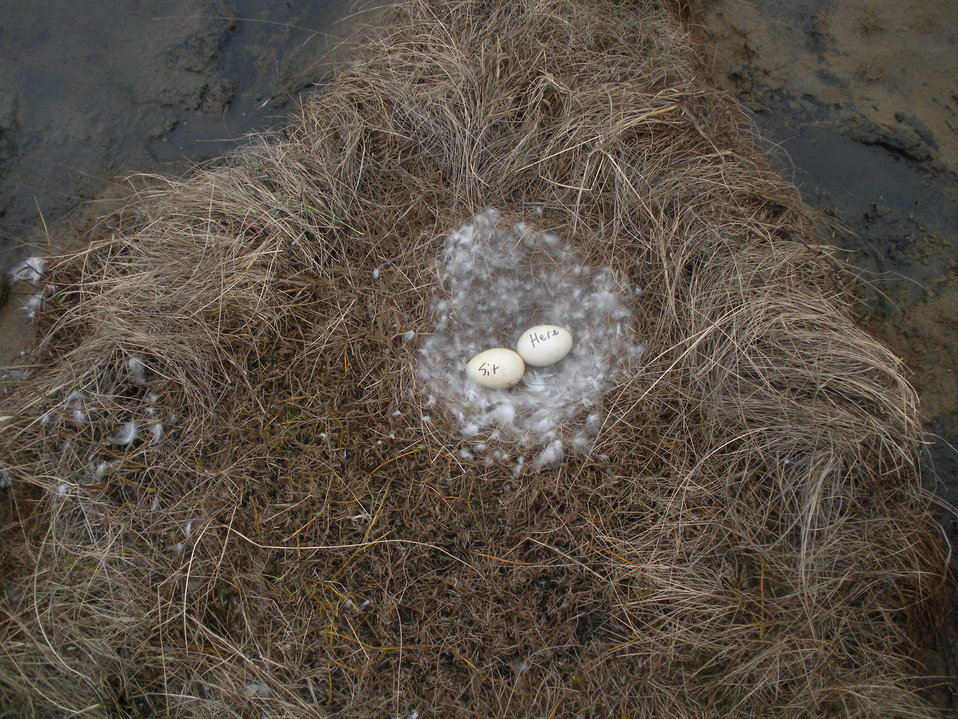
Concealing bow-trap

Once the bow-trap is in position it is covered with grass to camouflage it. In the case of spectacled eiders, since it is a threatened species, the eggs will be removed from the nest and replaced with 'dummy' eggs to prevent any unnecessary harm to the eggs.

USFWS Yukon Delta NWR